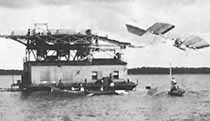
Samuel P. Langley

Early Years -- Samuel P. Langley